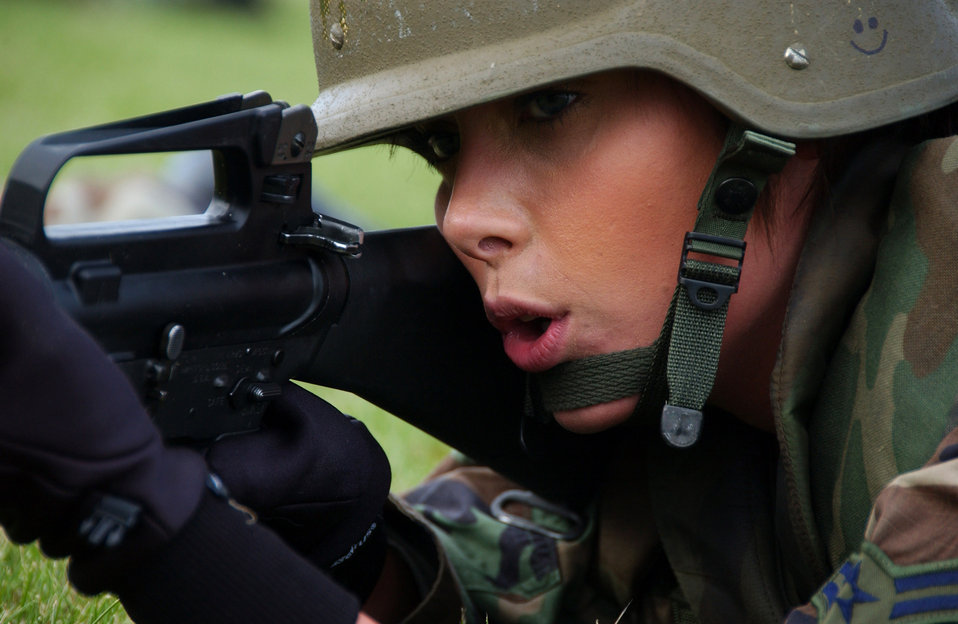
Air warriors train for deployment

An Airman aims her M-16 from the prone position after low crawling as a part of combat skill training Aug. 3 at Eielson Air Force Base, Alaska. This training gives Airmen the skills necessary to perform and adapt in a combat environment while deployed.